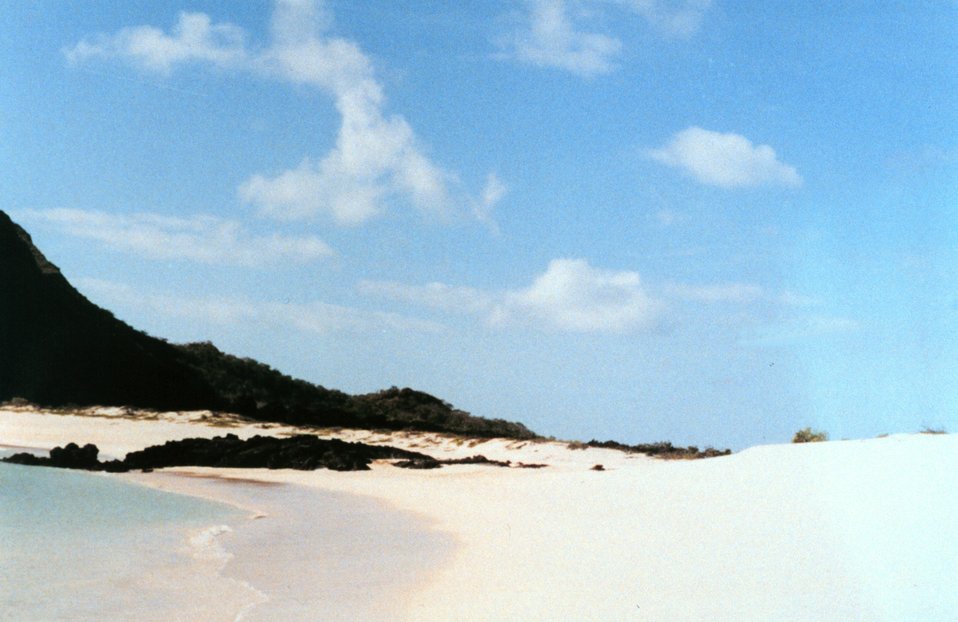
Cerro Beach